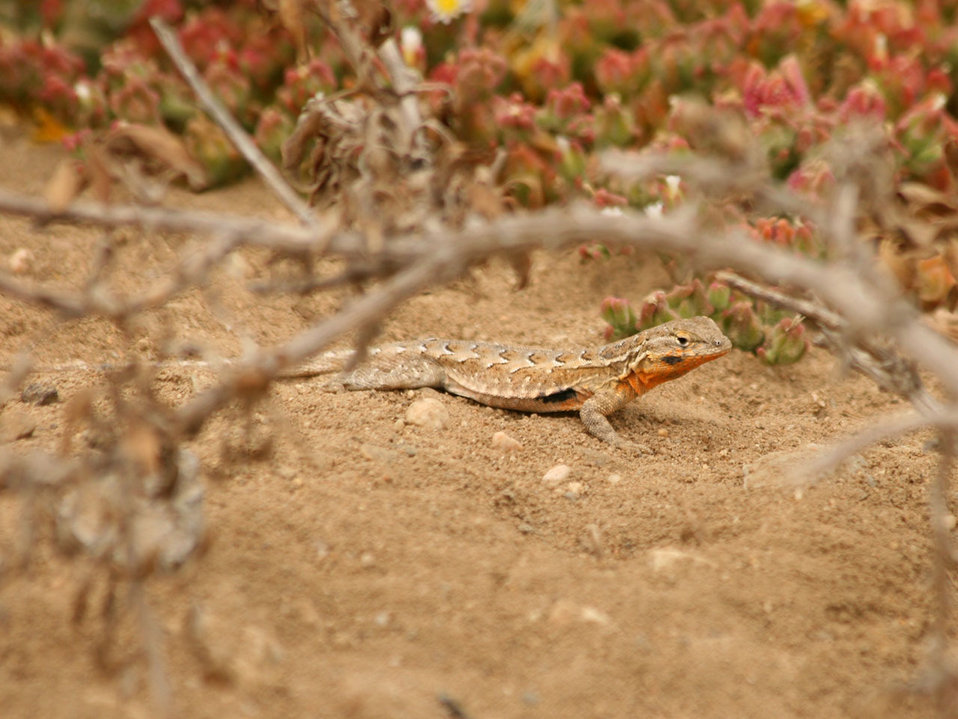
Small lizard

Shot at bolsa chica ecological reserve, huntington beach, ca..